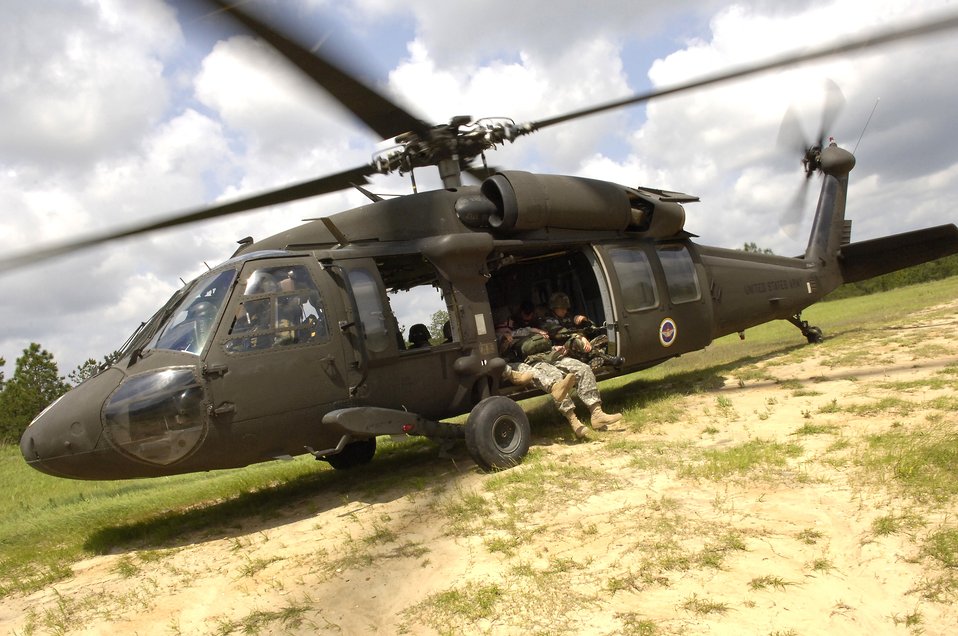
Special ops training

An Army UH-60 Blackhawk waits to take off from drop zone